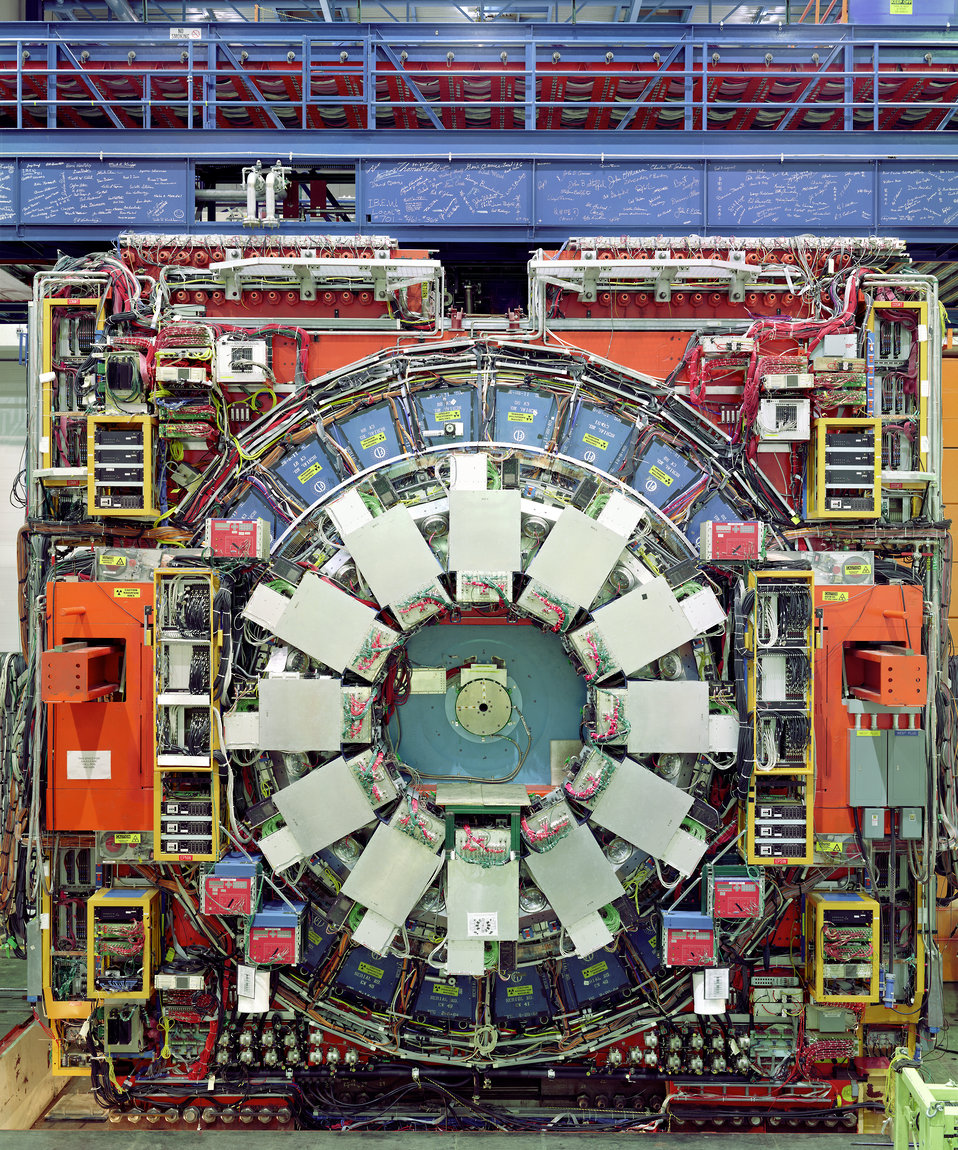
Collider Detector at Fermi National Accelerator Laboratory.

The Collider Detector is part of a complex of atom-equipment scientists at Fermilab have been building. The 45 ton, two story devise is designed to capture and catalog subnuclear fragments that scatter from head-on collisions of protons and antiprotons. It uses about 100,000 electronic channels to gather and record data from each collision. Scientists believe the detector will greatly improve understanding of the makeup of the universe.